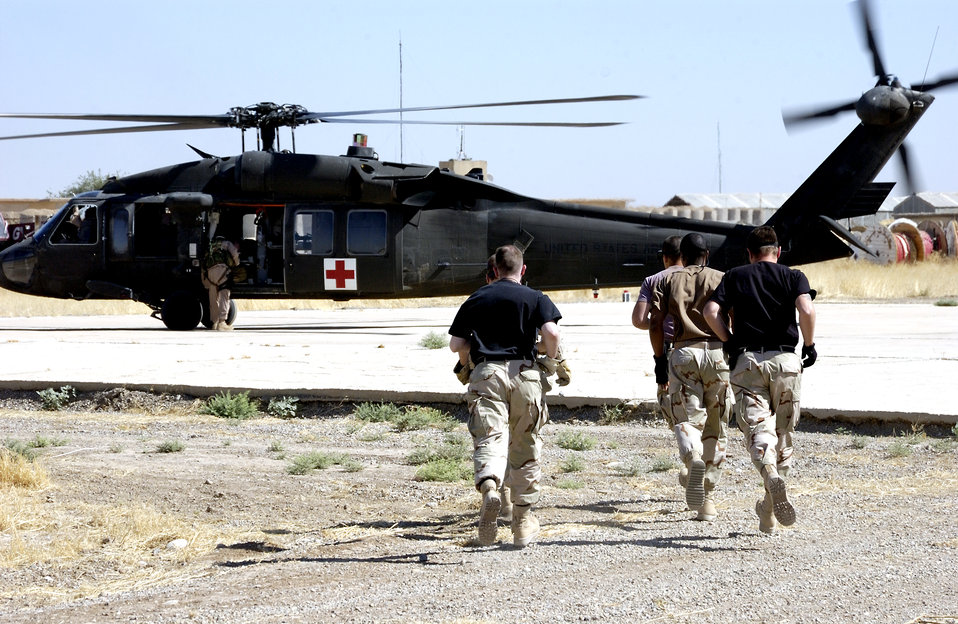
Medics in action

KIRKUK AIR BASE, Iraq -- Airmen of the 506th Expeditionary Medical Squadron run to get a wounded servicemember from an Army Blackhawk helicopter June 24. The Airmen here provide medical care to more than 3,300 warfighters deployed supporting Operation Iraqi Freedom.